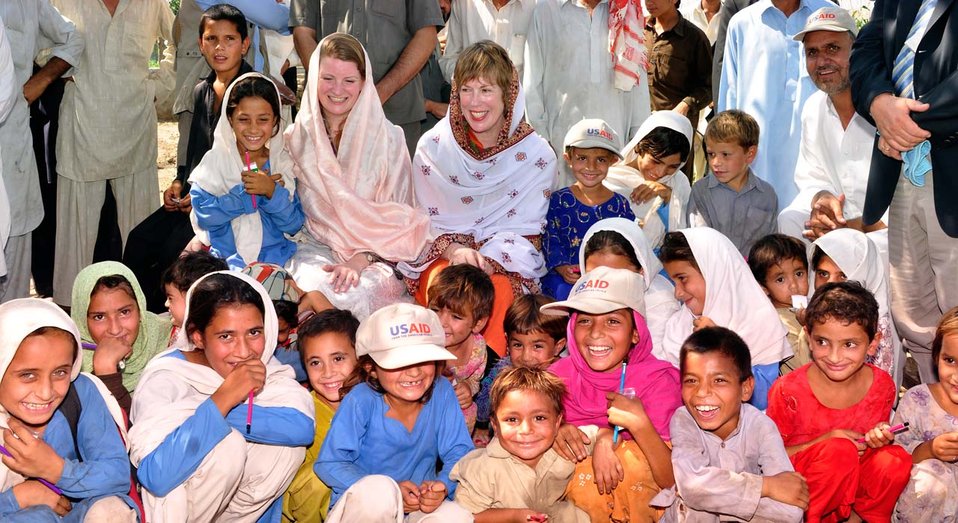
MW Agri Visit - 092711 - 024